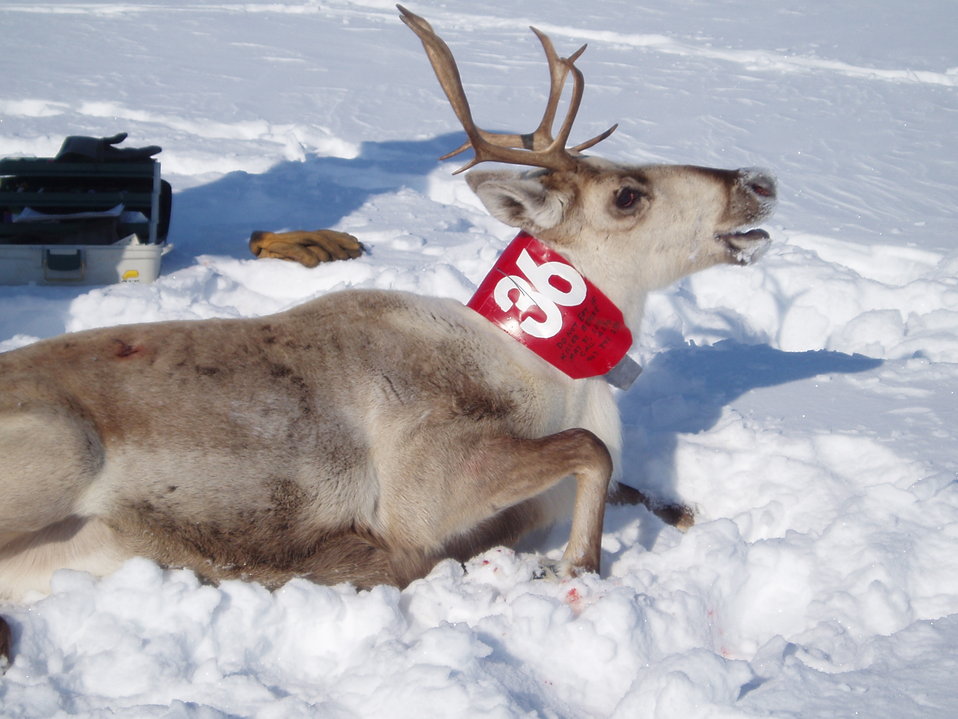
Collared Caribou

The Alaska Department of Fish & Game has been deploying uniquely marked and colored collars on caribou which the refuge helps to resight. The collars are used to study such things as calf mortality; habitat use and range during calving, winter,and summer; and locating animals to determine population estimates.

USFWS Yukon Delta NWR